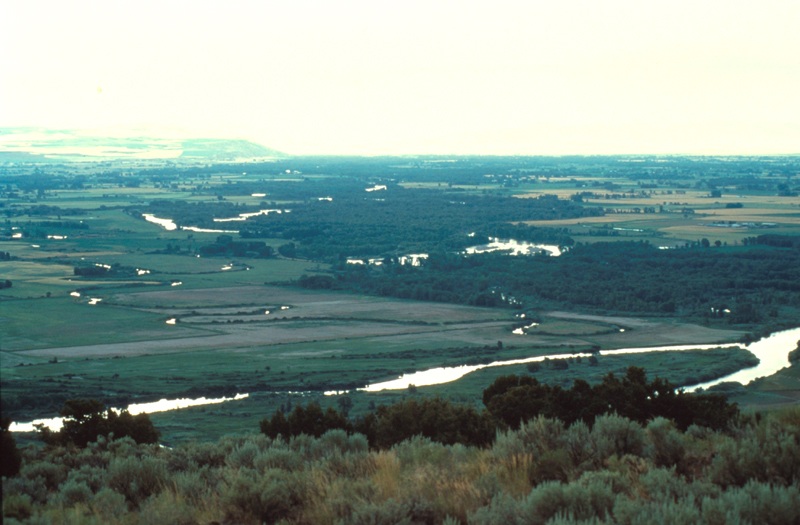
South Fork of the Snake River